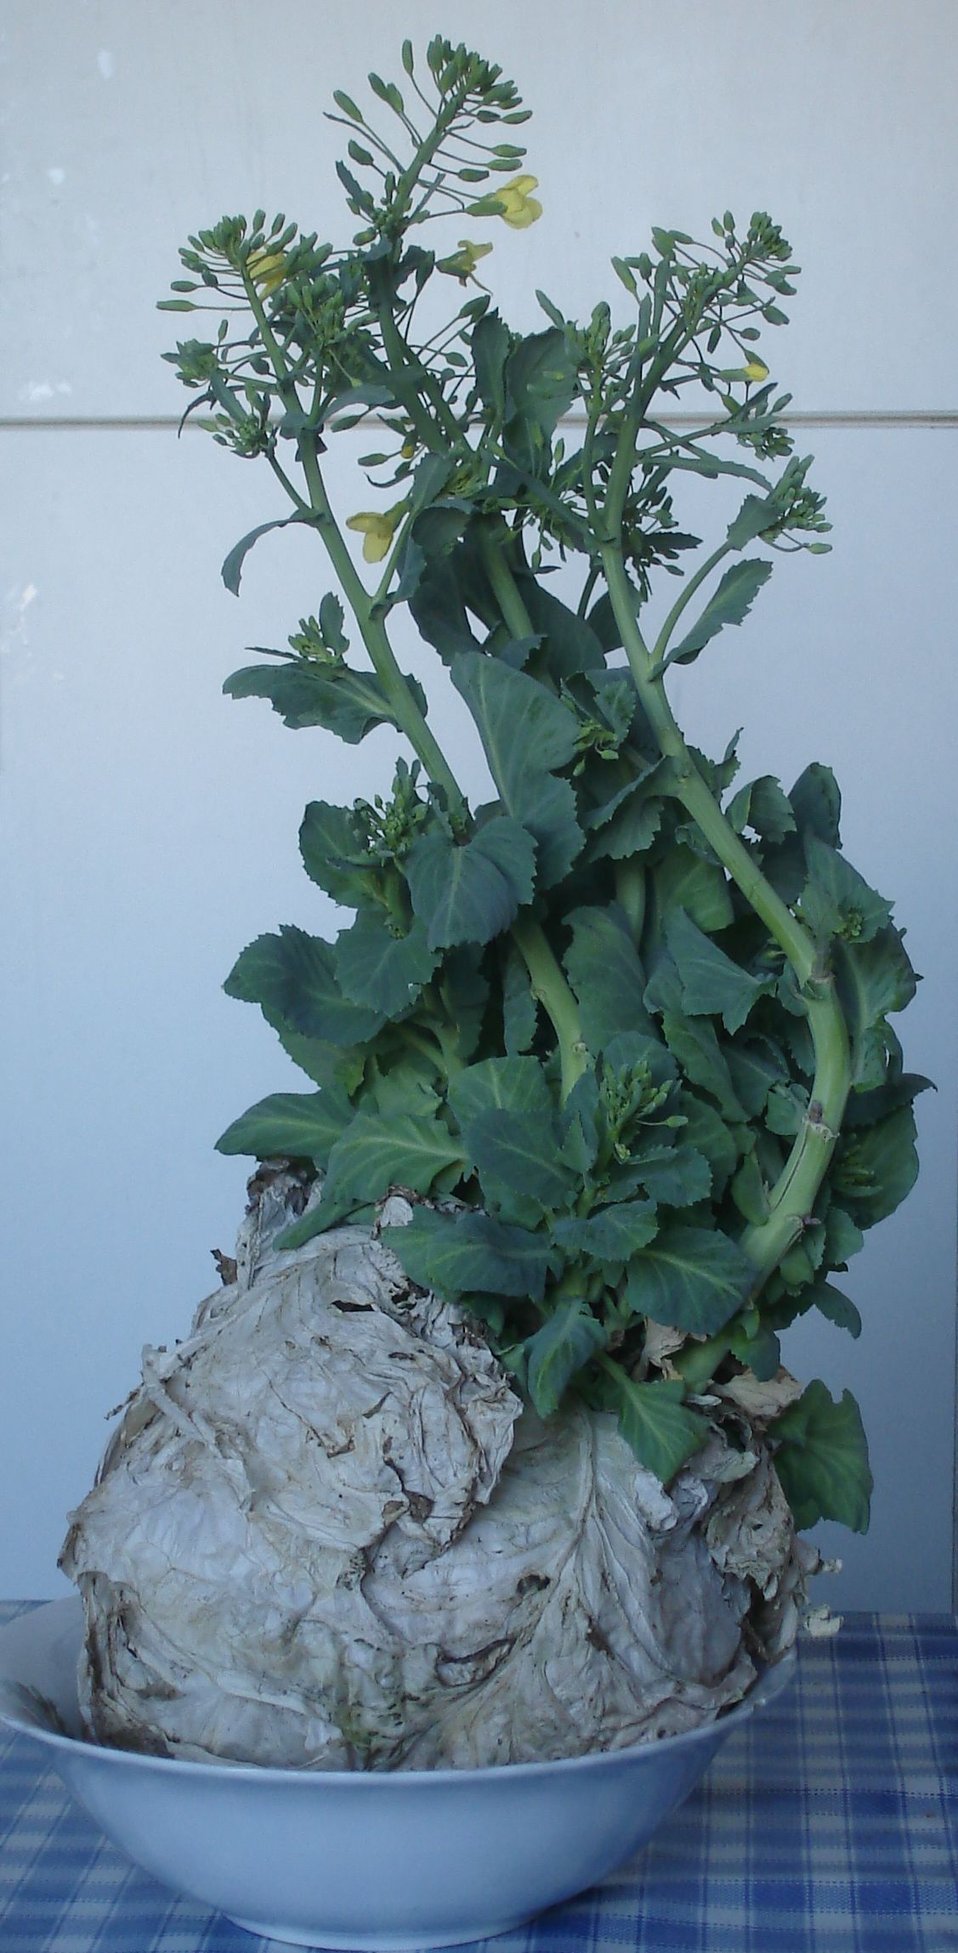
Română: Varză înflorită în ianuarie 2008, după ce a stat pe balcon din toamnă Cabbage in blossom in January 2008 after being held on a closed balcony since the autumn 2007